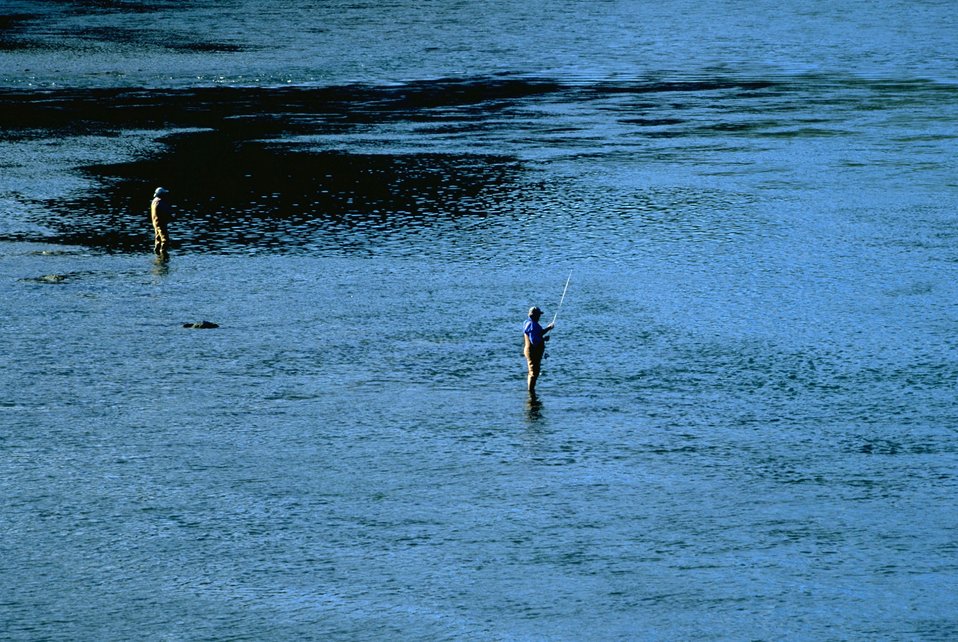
Scenic view of fishermen on the blue Missouri River